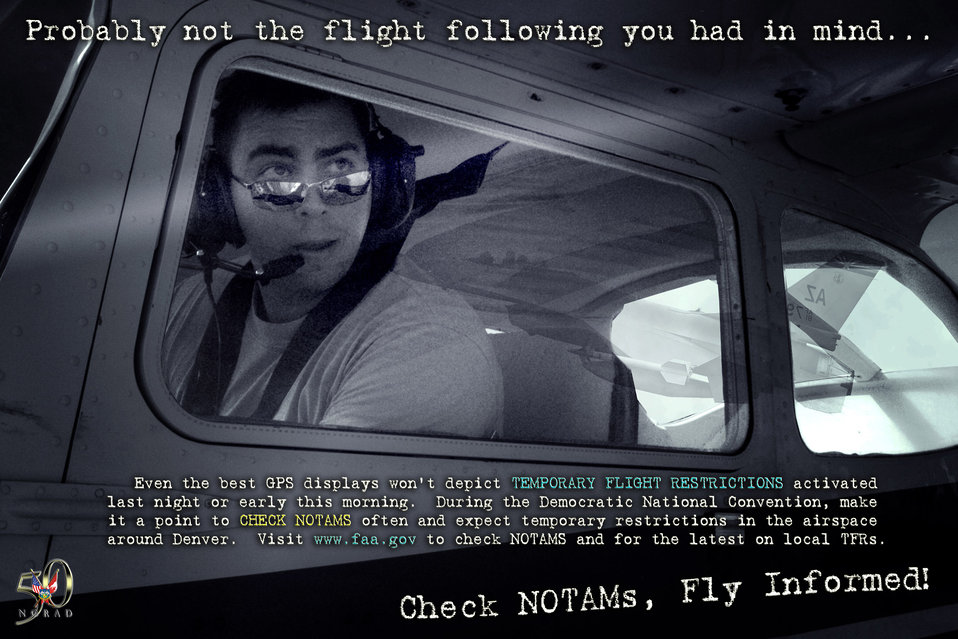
Check NOTAMS, Fly Informed!

A CONR poster depicts the intercept of a private aircraft to remind pilots of the temporary flight restrictions in effect during the Republican and Democratic National Conventions. CONR distributed the posters to fixed-base operators within 100 nautical miles of Denver and Minneapolis/St. Paul to reminD pilots to